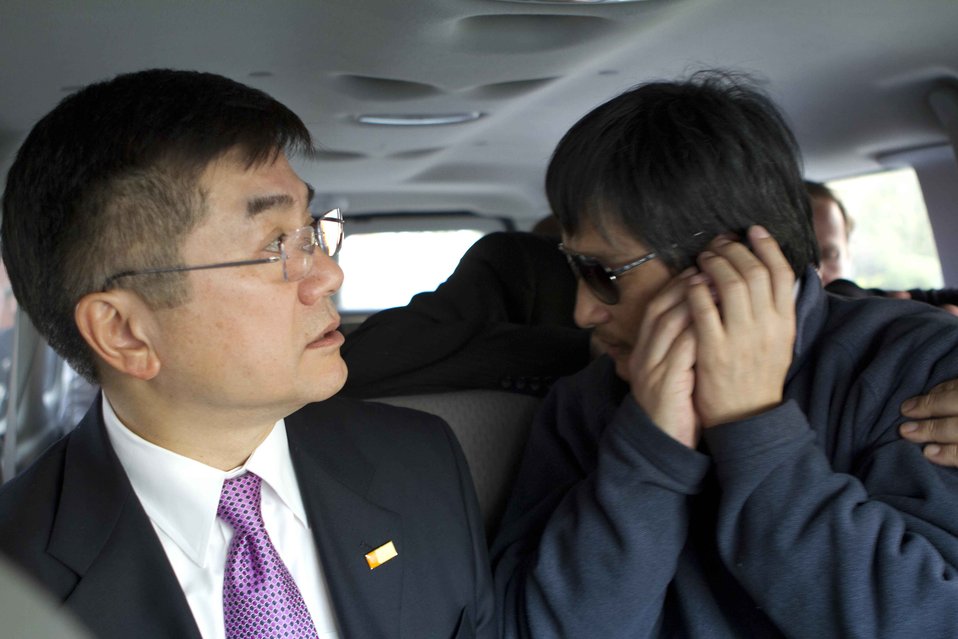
Ambassasdor Locke With Chen Guangcheng

U.S. Ambassador to China Gary Locke with Chen Guangcheng at the U.S. Embassy in Beijing, China, on May 1, 2012.